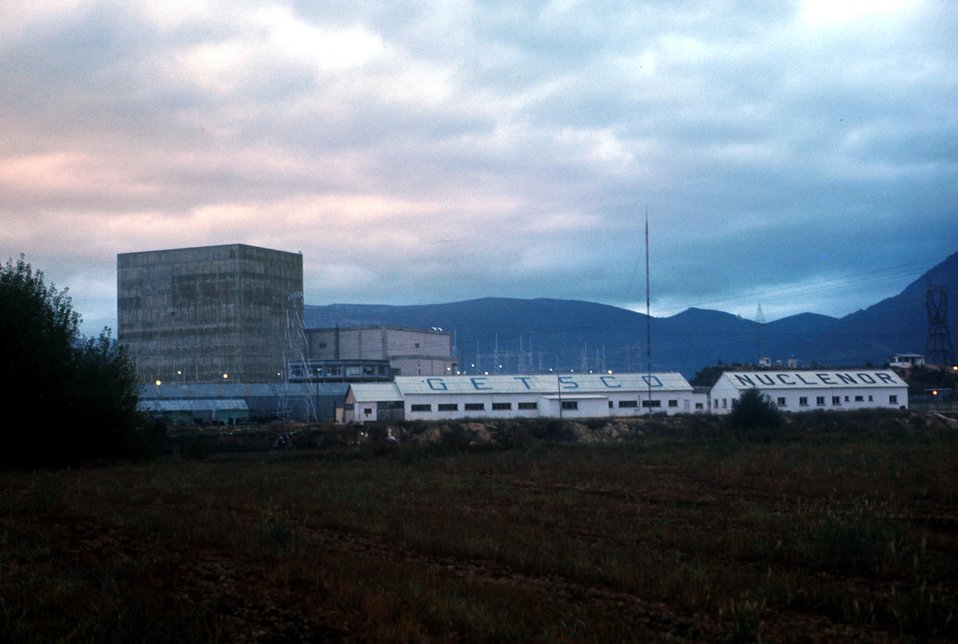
Spain -- Nucleanor Nuclear Plant. c. 1970